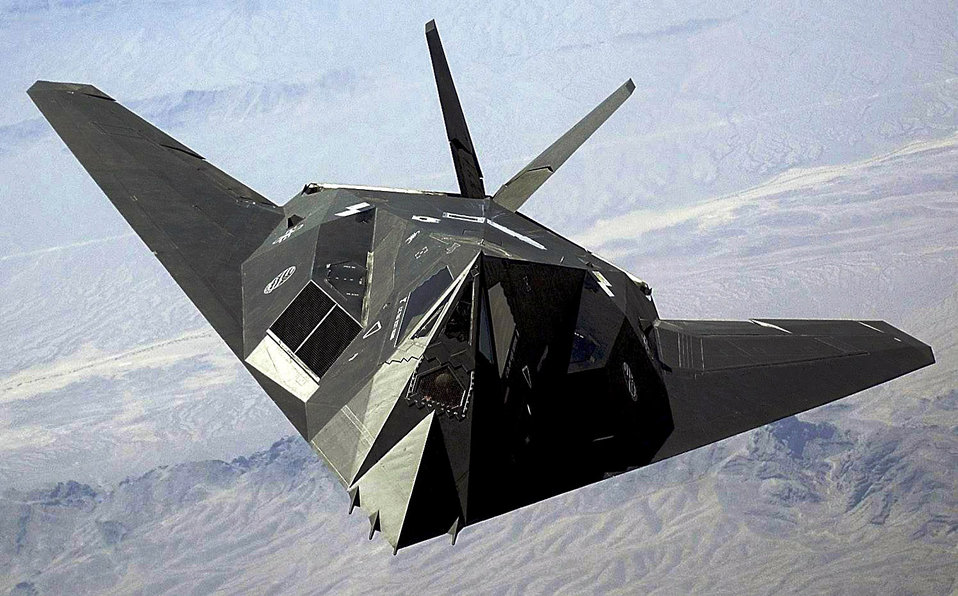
F-117 to retire

The F-117 Nighthawk, the world's first attack aircraft to employ stealth technology, is retiring after 27 years of U.S. Air Force service. The aircraft made its first flight at the Tonopah Test Range, Nev., in June 1981, just 31 months after full-scale development was authorized. The Nighthawk program remained classified until November 1988, when a photo of the jet was first unveiled to the public.